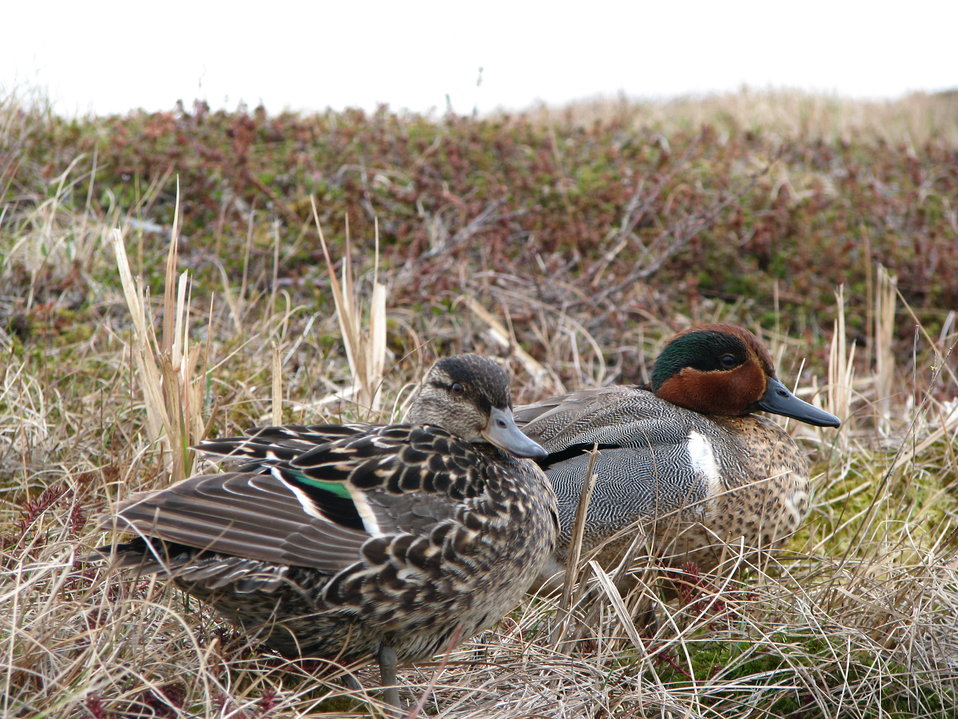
Green-winged teal pair

USFWS Yukon Delta NWR
This pair of green-winged teal really enjoyed using a small pond near one of the refuge field camps. They were extremely photogenic.